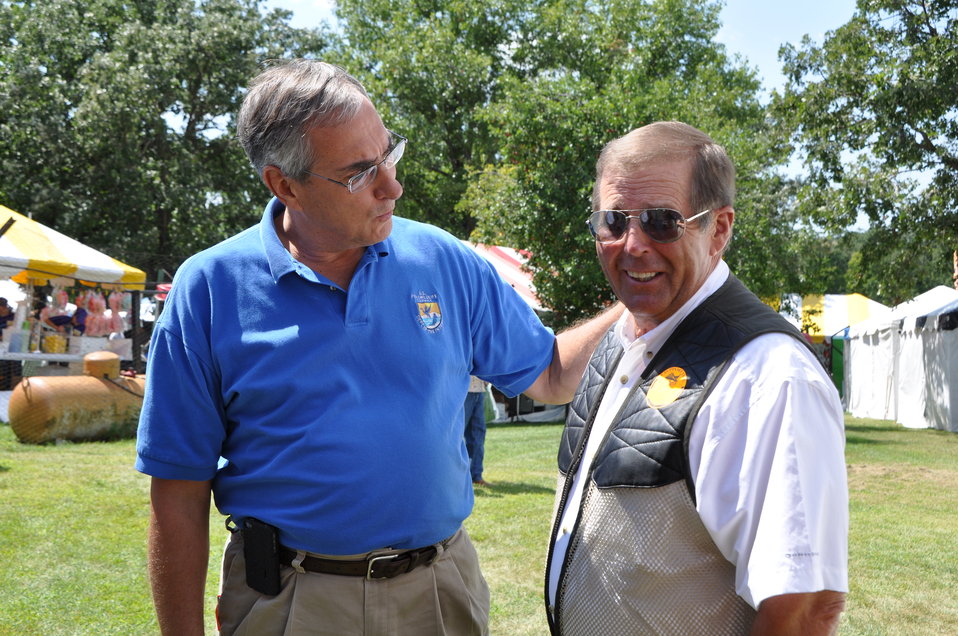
Regional Director Tom Melius and Minnesota Bound host Ron Schara.